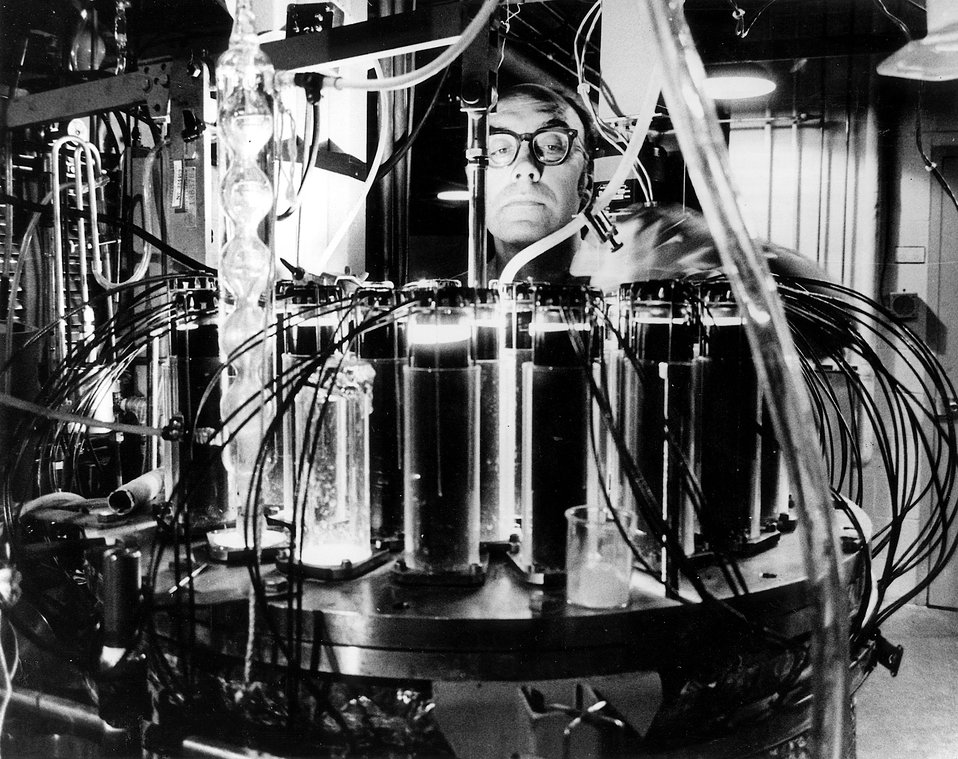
More than 2500 grams of fully deuterated isotope hybrid blue-green algae were produced for use by the AEC's Argonne scientists in the extraction, purification and characterization of proteins
c.1972